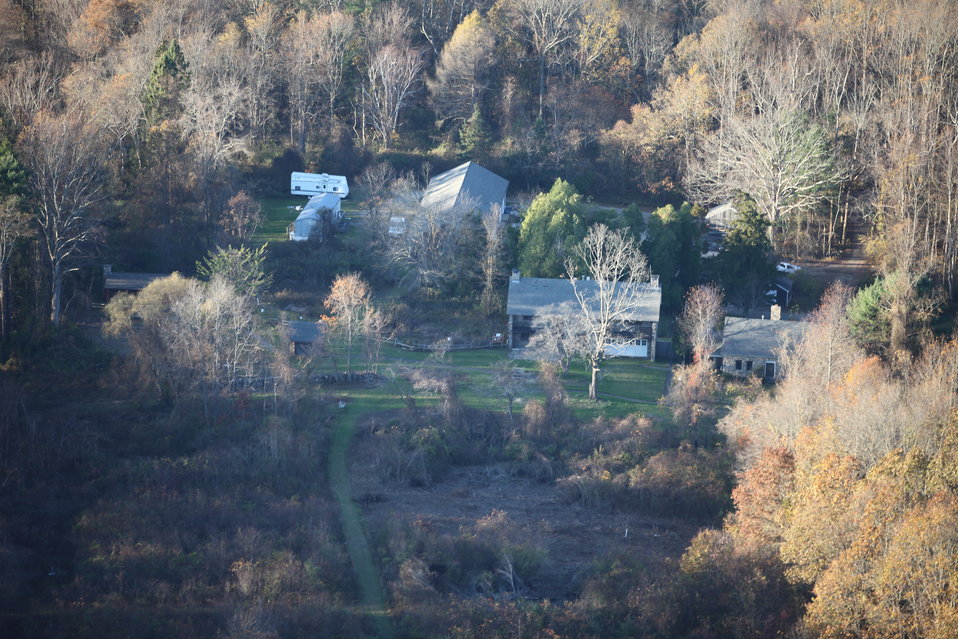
Stewart B. McKinney National Wildlife Refuge Headquarters (CT)

Aerial view of the Stewart B. McKinney National Wildlife Refuge headquarters facility in the aftermath of storm Sandy.